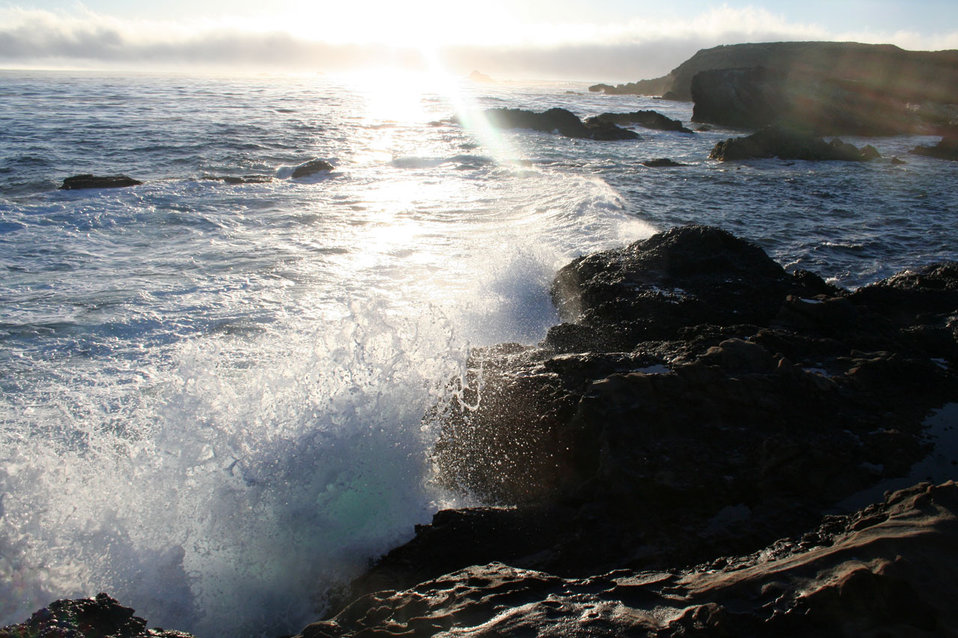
Carmel splash

Waves crashing at sunset on the carmel by the sea coastline.